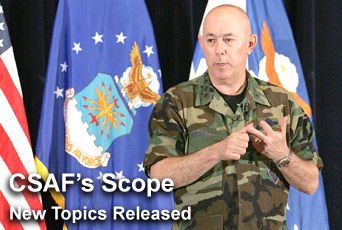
Airman's Creed, military health care on CSAF's Scope

The CSAF's Scope focuses on current topics the Air Force chief of staff feels are of special importance to today's Airmen. Among Gen. T. Michael Moseley's top issues is the new Airman's Creed and military health care.